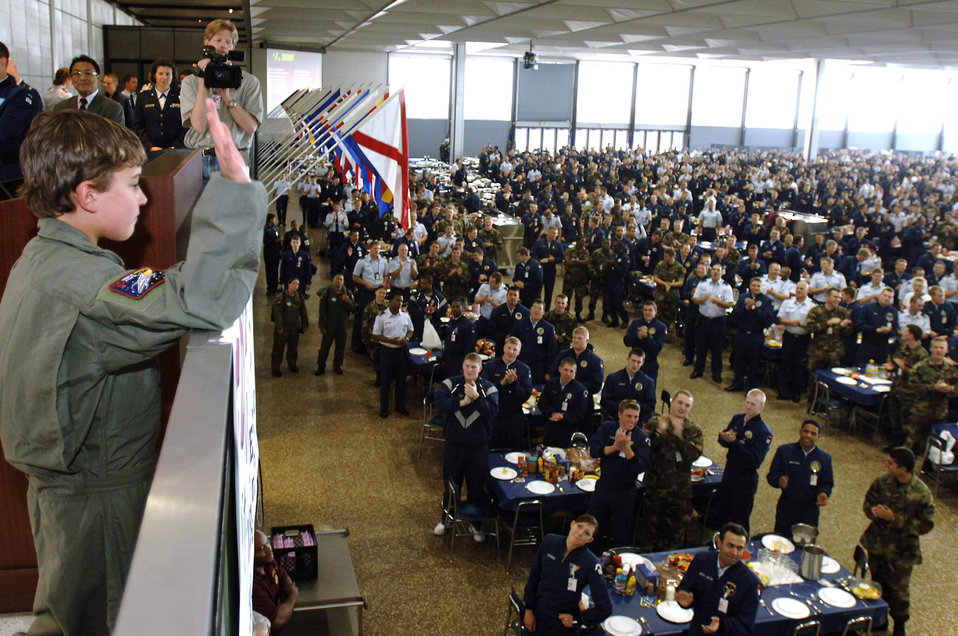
Academy honors 'Cadet for a Day' in Colorado

Ten-year-old Julian Willis receives a standing ovation from 4,000 cadets May 4 during lunch at the U.S. Air Force Academy, Colo. The Make-a-Wish Foundation and the Air Force Academy made Julian a